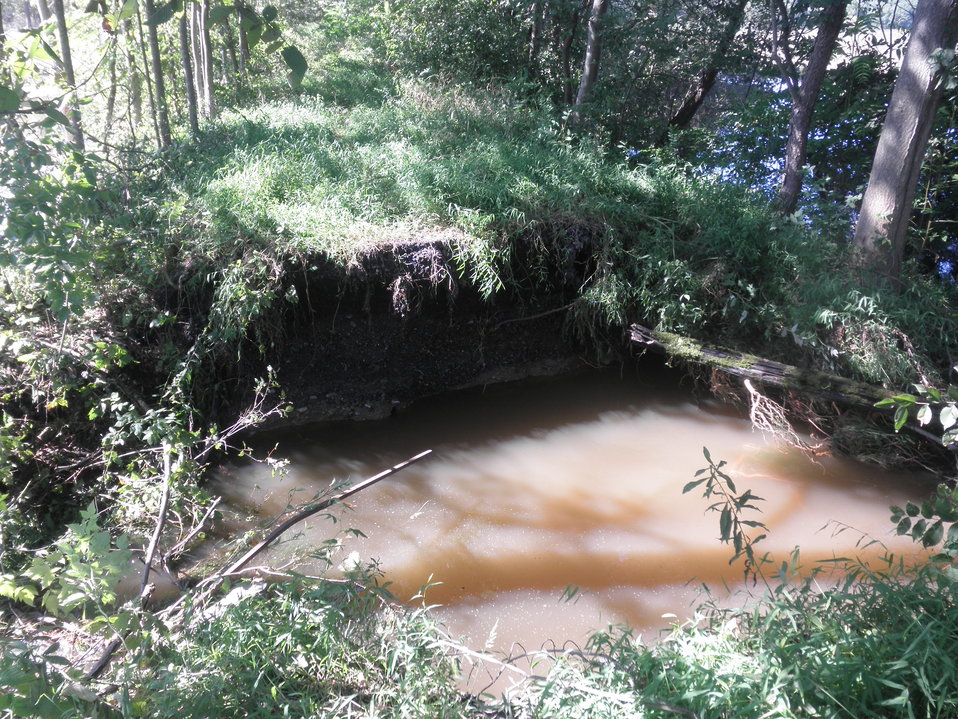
Hurricane Damage at Wallkill River National Wildlife Refuge August 30, 2011

Timberdoodle extension culvert blowout at Wallkill River National Wildlife Refuge in Sussex, NJ.